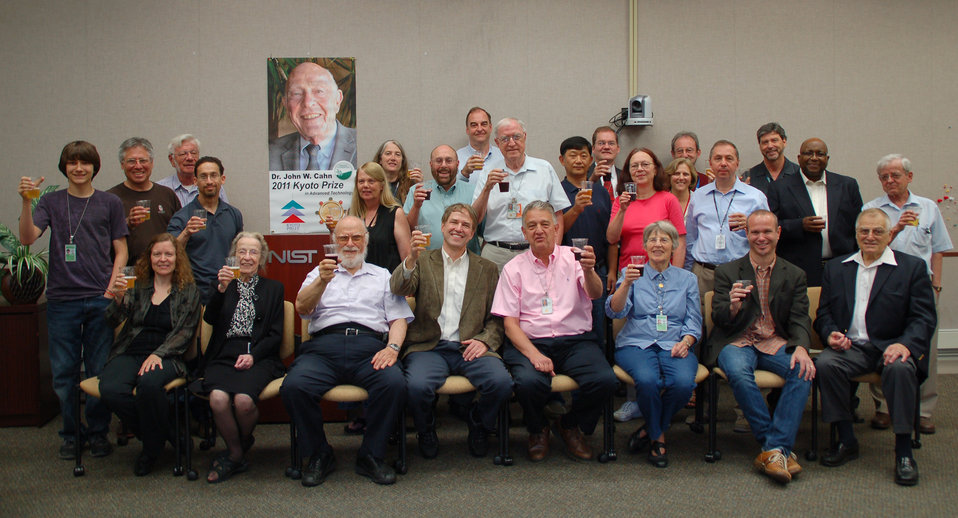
John Cahn Celebration

Colleagues at NIST raise a toast to John Cahn for being selected to receive the 2011 Kyoto Prize.